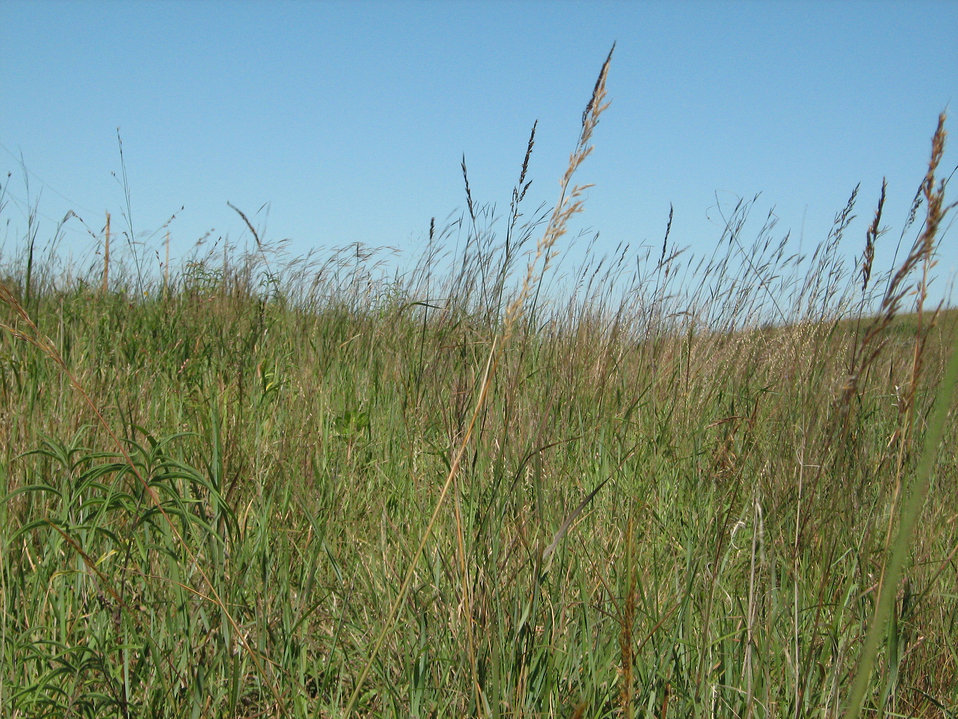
June Grazed Paddock

Photo from paddock grazed in June, dry prairie hilltops were dominated by seeded out warm season vegetation. Photo from 9-5-12.